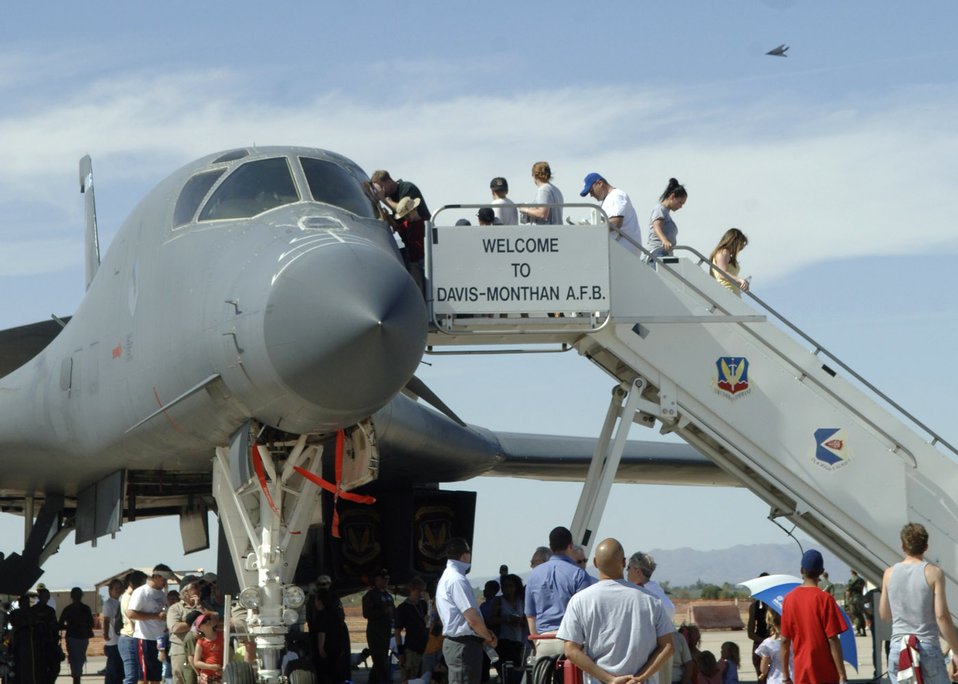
Air show features '80 Years of Airpower for America'

Spectators enjoy a chance to view Air Force aircraft like this B-1B Lancer during the 2007 Aerospace and Arizona Days air show March 18 at Davis-Monthan Air Force Base, Ariz. The two-day air show offered public an up-close look at military and civilian aerial demonstrations and static-display aircraft from across the U.S. The theme for this year's show was